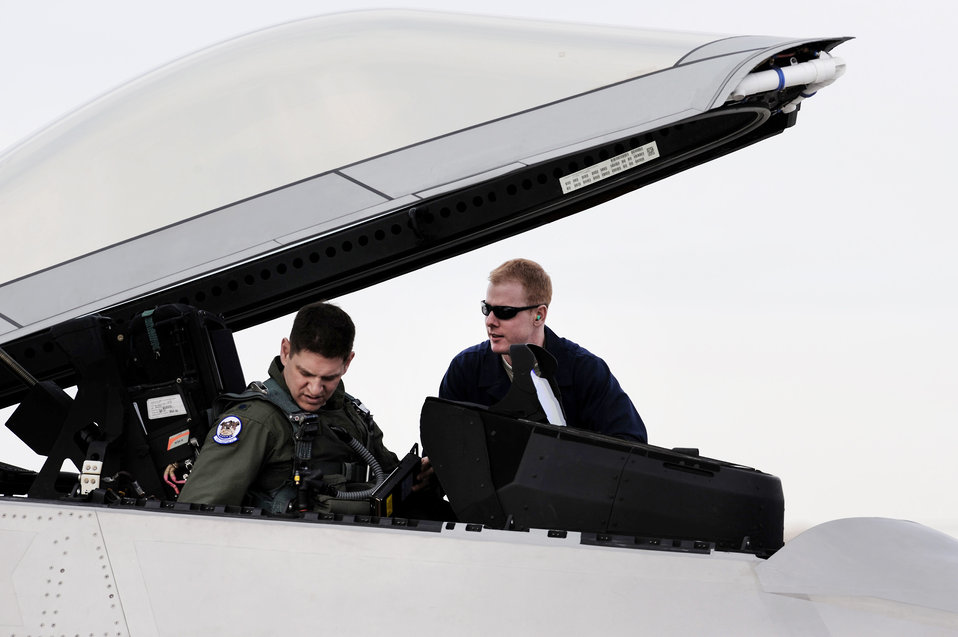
Raptors reign at Red Flag

Lt. Col. Joe Kunkel and Staff Sgt. Randall Woode perform a pre-flight check in an F-22 Raptor Feb. 4, 2010, before a Red Flag training exercise at Nellis Air Force Base, Nev. Red Flag is a realistic combat training exercise involving the air forces of the United States and its allies. Colonel Kunkel is assigned to the 525th Fighter Squadron at Elmendorf AFB, Alaska, and Sergeant Woode is assigned to the 49th Aircraft Maintenance Squadron at Holloman AFB, N.M.